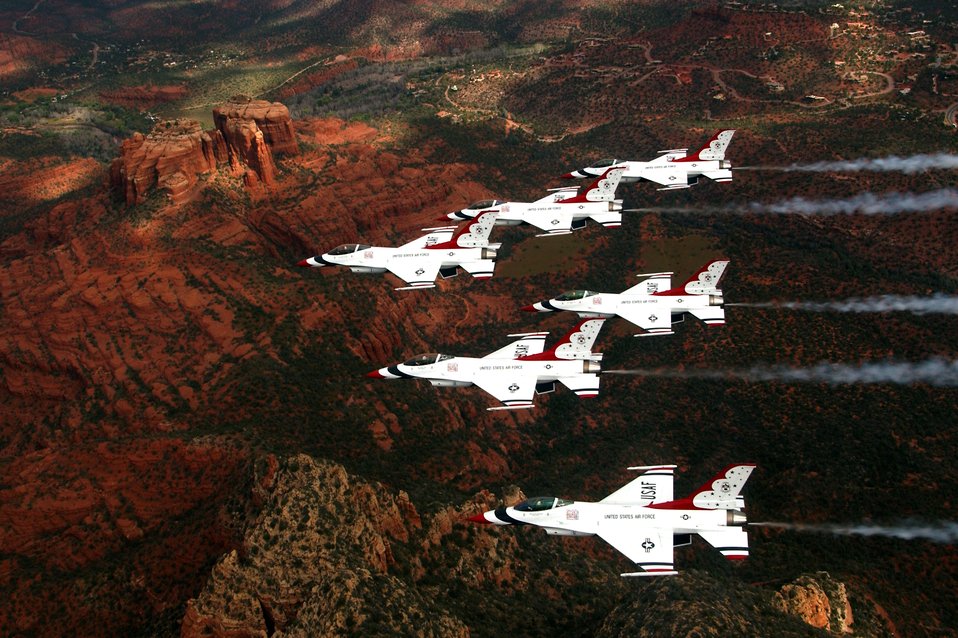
Six show birds

OVER SEDONA, Ariz. --- The U.S. Air Force Air Demonstration Team Thunderbirds fly a six-ship delta formation here after completing another air show recently.